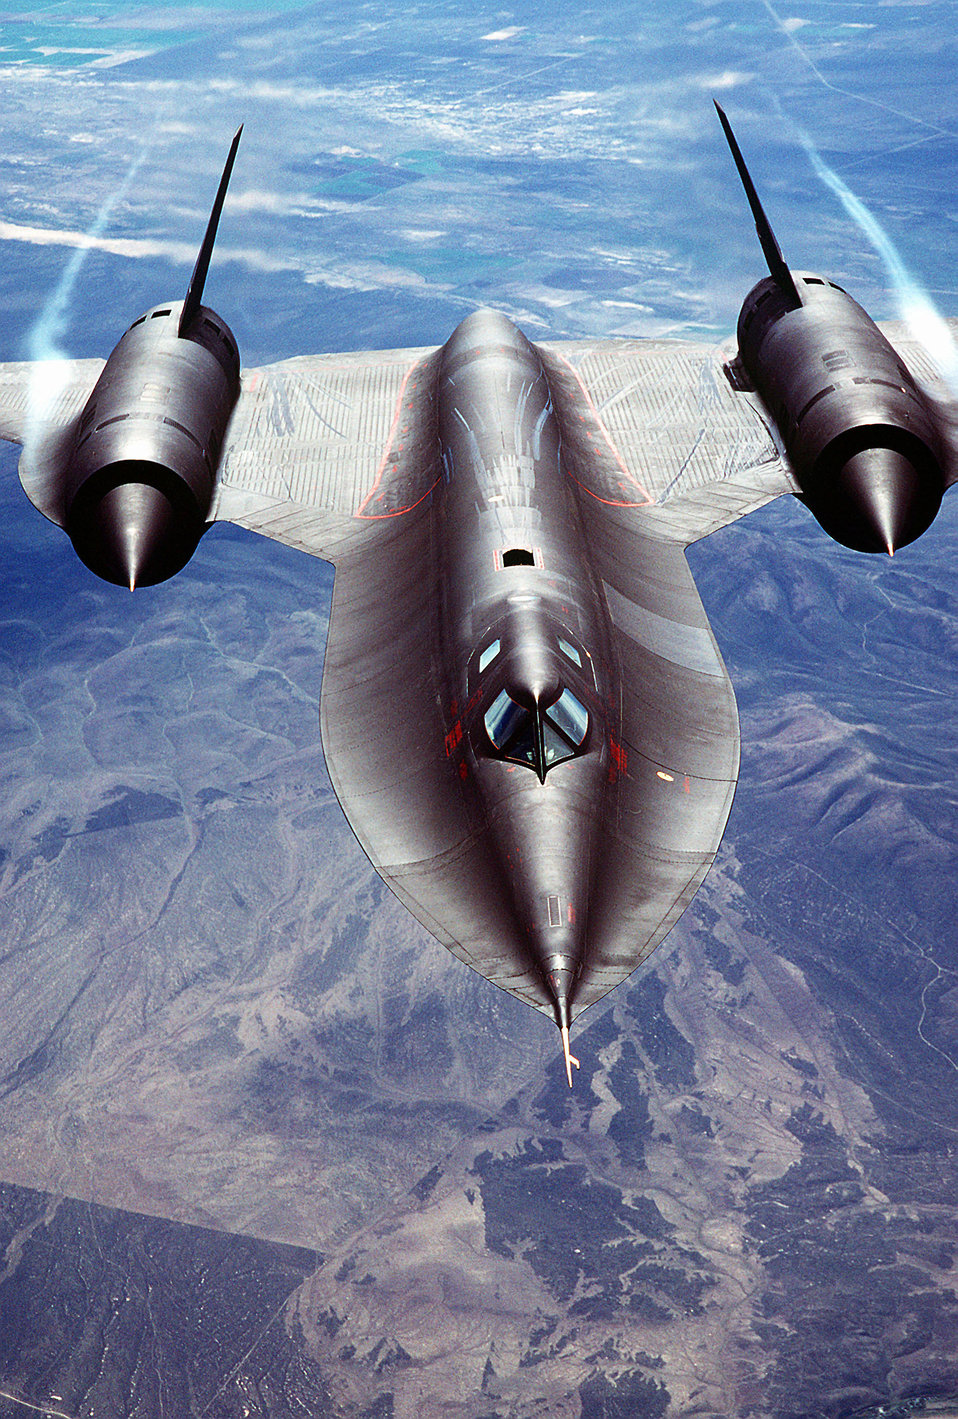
Blackbird

BEALE AIR FORCE BASE, Calif. -- An air-to-air overhead front view of an SR-71A strategic reconnaissance aircraft. The SR-71, unofficially known as the "Blackbird," is a long-range, advanced, strategic reconnaissance aircraft developed from the Lockheed A-12 and YF-12A aircraft. The U.S. Air Force retired its fleet of SR-71s on Jan. 26, 1990, but returned them in 1995 until January 1997. Throughout its nearly 24-year career, the SR-71 remained the world's fastest and highest-flying operational aircraft.